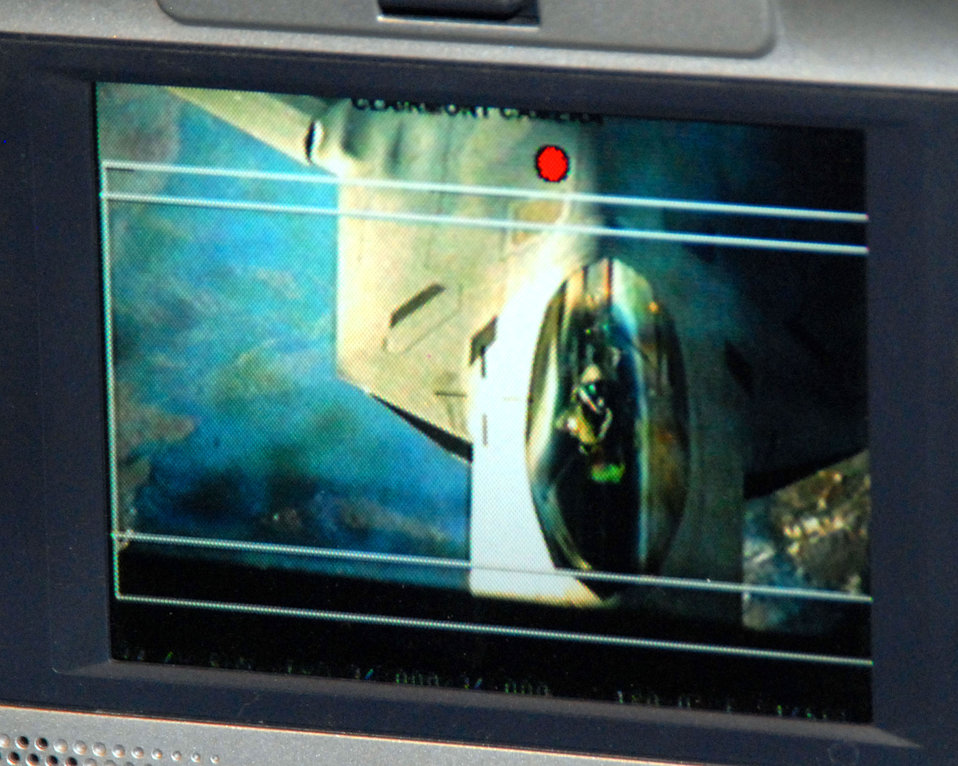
Edwards, Travis Airmen 'Do something amazing'

As seen through a monitor on board a KC-10 Extender, an F-22 Raptor is filmed pulling up behind a KC-10 for an aerial refueling Feb. 7 above Edwards Air Force Base, Calif.